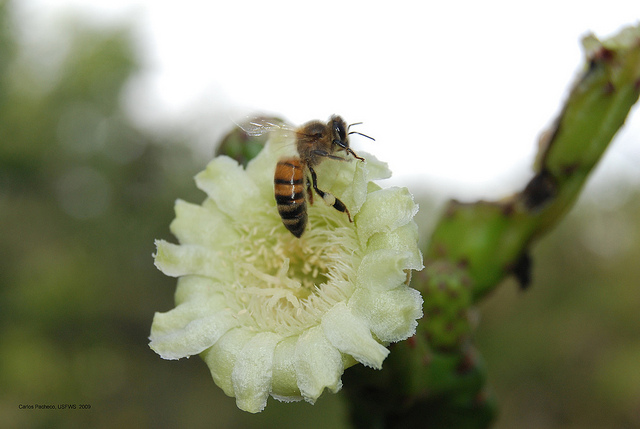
bee on Leptocerus grantianus

Cabo Rojo National Wildlife Refuge, PR